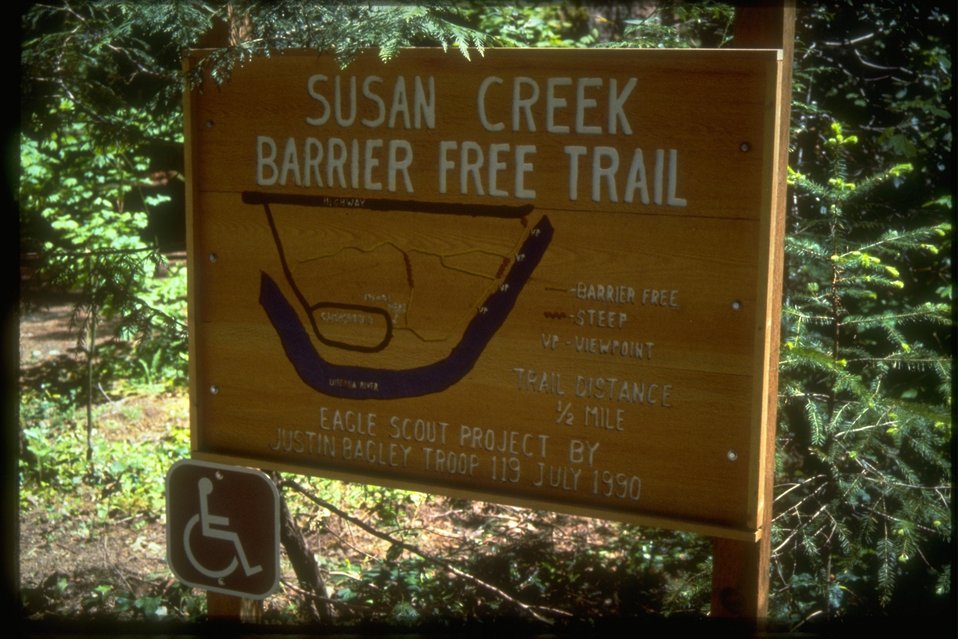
Susan Creek barrier-free Trail sign.